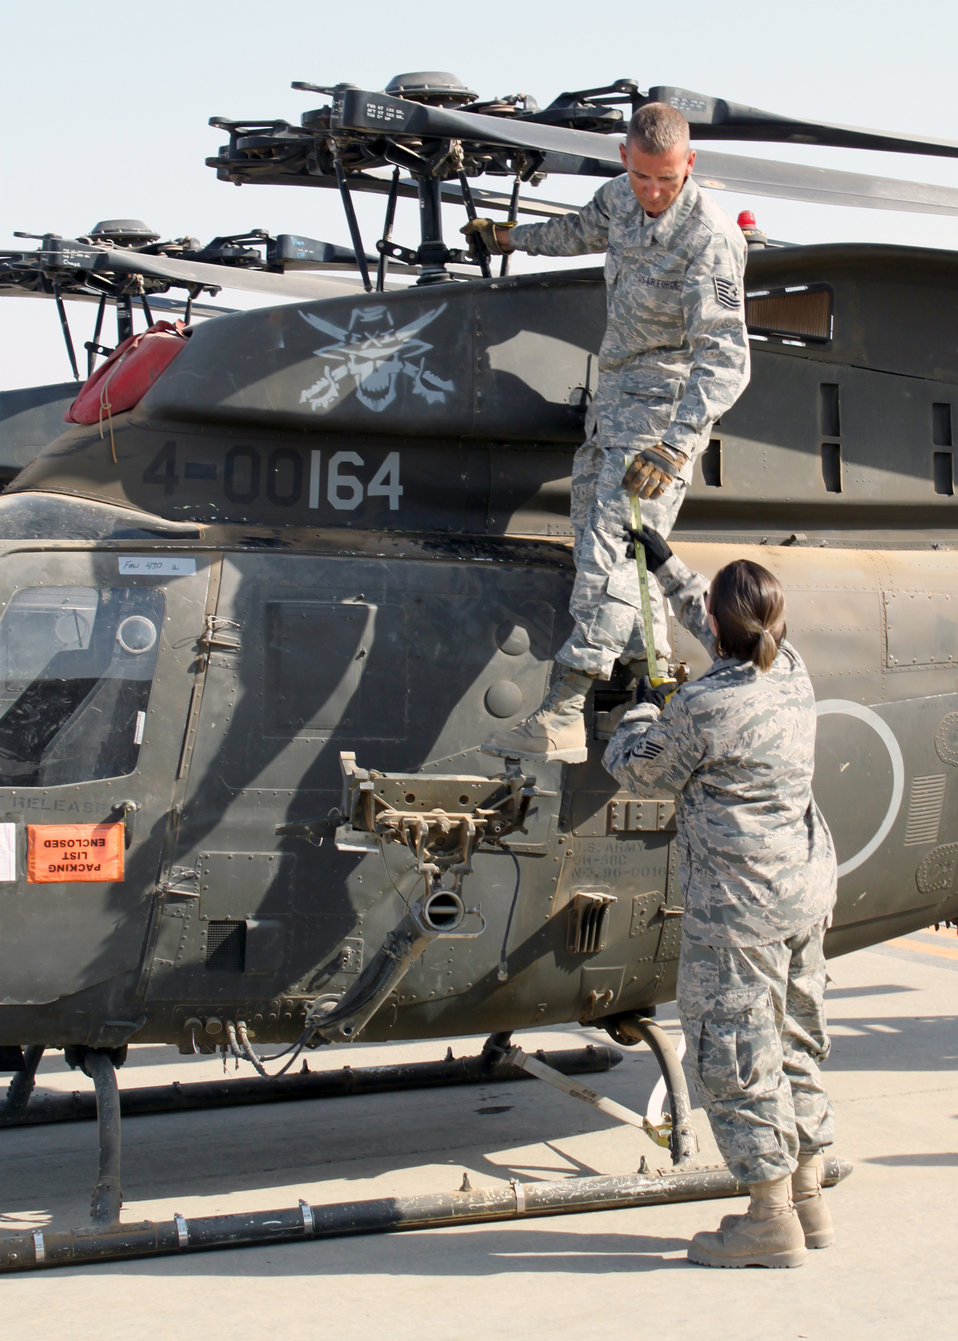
Balad Airmen move helicopters

Tech. Sgt. James Dupuis and Staff Sgt. Angel Lombana measure the height of an Army OH-58 Kiowa helicopter during transport preparation July 15, 2010, at Joint Base Balad, Iraq. Sergeants Dupuis and Lombana are from the 332nd Expeditionary Logistics Readiness Squadron.